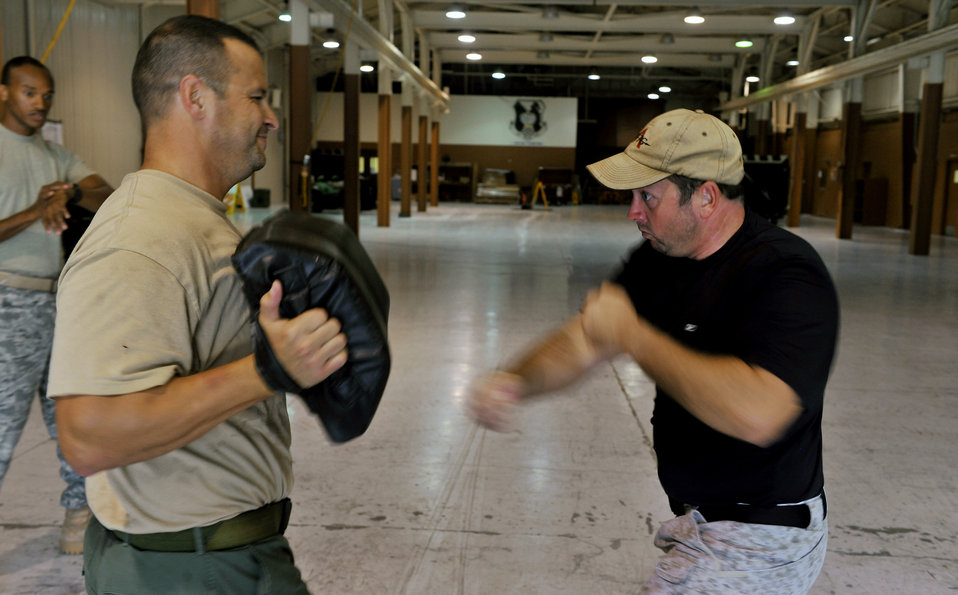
Airmen teach Krav Maga techniques to local law enforcers

Lt. Joseph Dukes punches a bag held by Steve Jarrmaillo during a Krav Maga timed combat session Oct. 14, 2010 at Moody Air Force Base, Ga. One part of training for Krav Maga is conditioning, before practicing a technique, instructors lead members through a vigorous conditioning session. Lieutenant Dukes is a Lowndes County Sheriff's Department Special Weapons and Tactics team leader and training coordinator. Mr. Jarrmaillo is a Lowndes County Sheriff's Department reserve deputy.